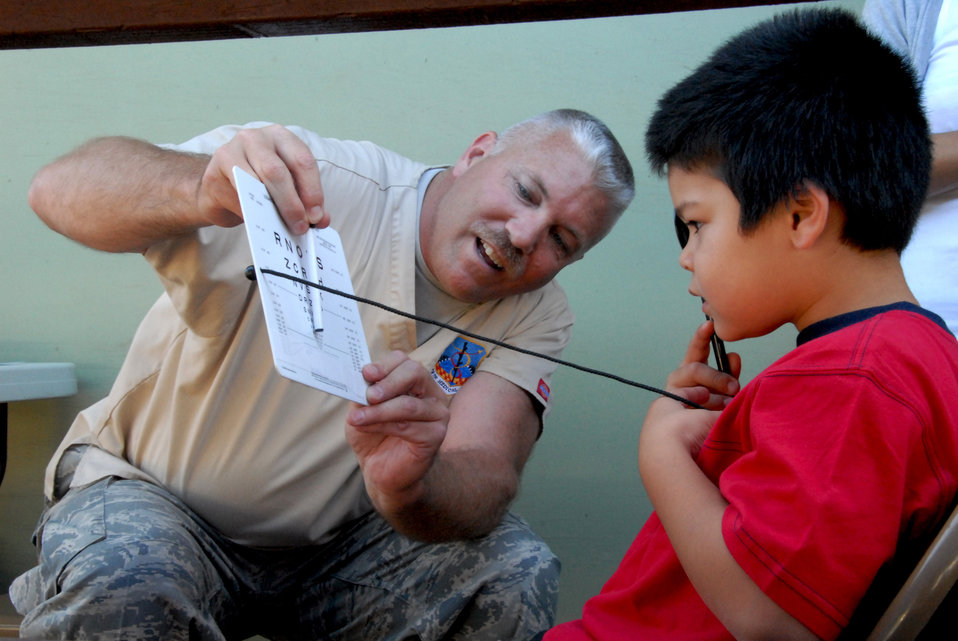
Ohio Air Guard Airmen provide medical services to Hawaii communities

Staff Sgt. Bill McConaha performs an eye screening to test near vision on a patient June 8, 2010, in Kona, Hawaii. Airmen from the 178th MDG are on a medical training deployment to provide free medical services to underprivileged communities that do not have access to health care on the island. Sergeant McConaha is an optometry technician with the 178th Medical Group.